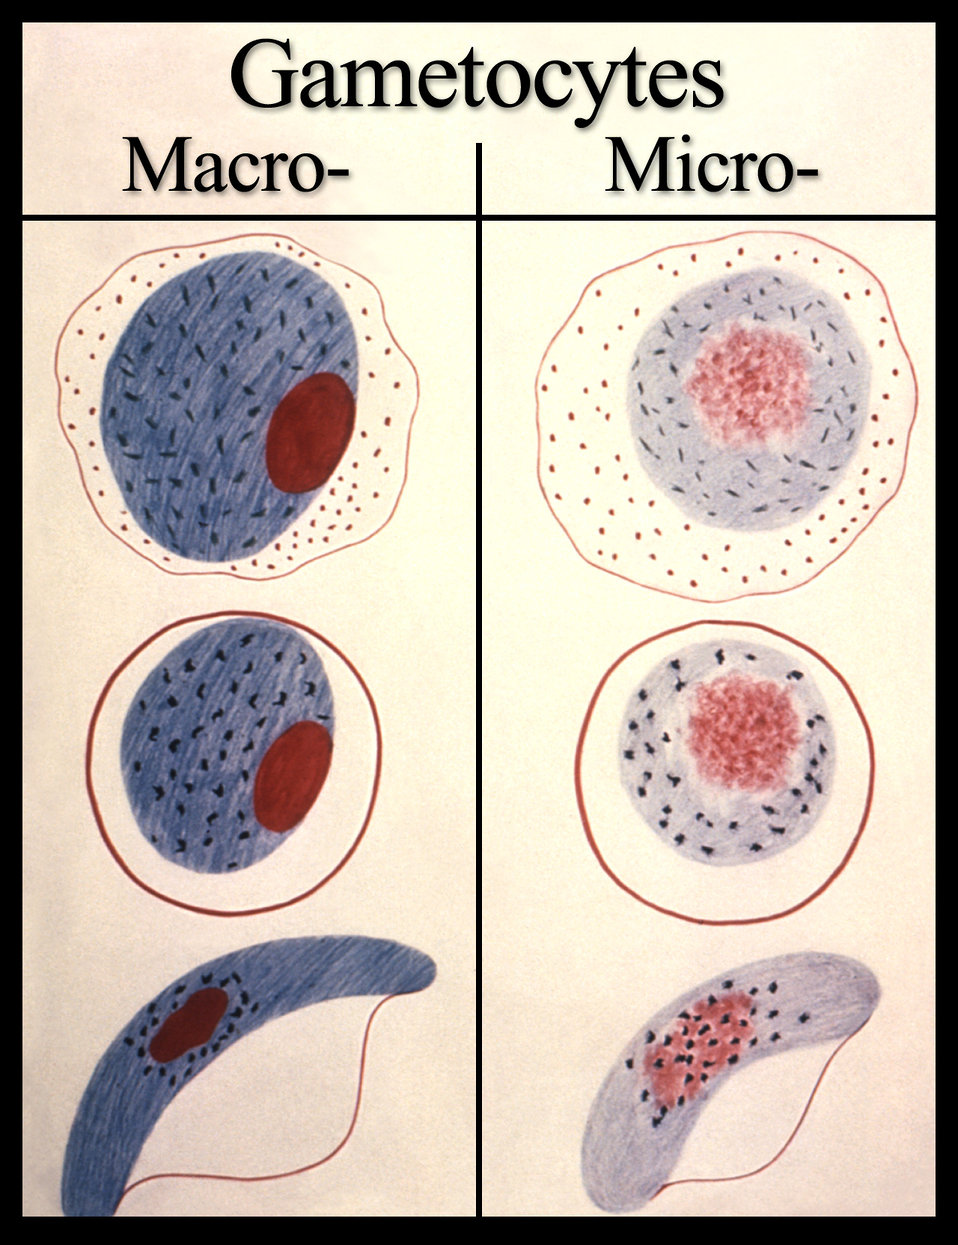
As a gametocyte, i.e., sexual erythrocytic stage, these are the various forms displayed by the developing malarial parasite.